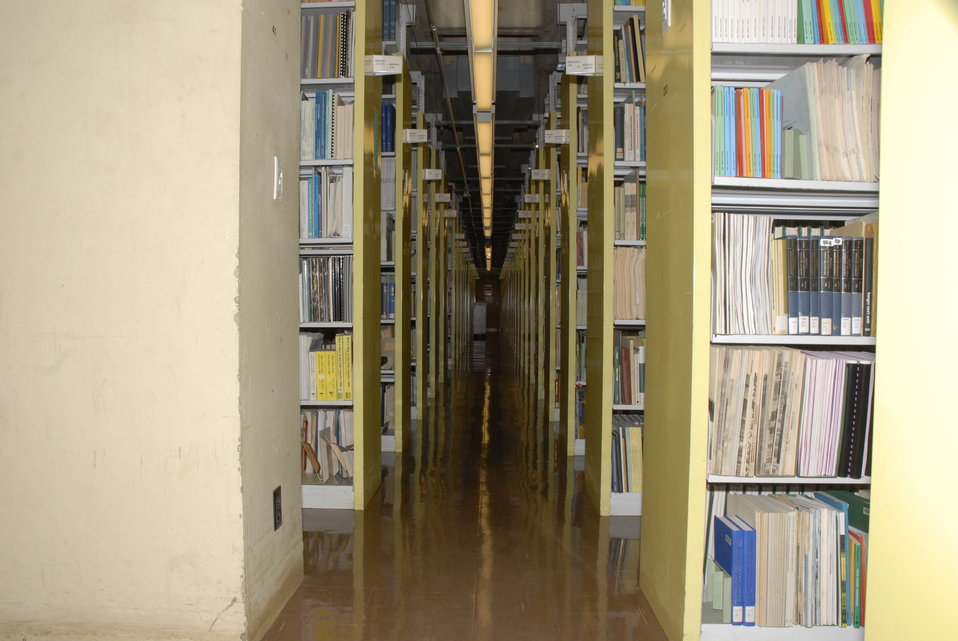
Hundreds of agricultural books are stored at the U.S. National Agricultural Library (NAL) in Beltsville, MD on August 22, 2008. NAL is one of the world's largest agricultural research libraries, and serves as a national library of the U.S. and as the library of the U.S. Department of Agriculture (USDA). The library is one of four national libraries of the U.S. (along with the Library of Congress, the National Library of Medicine, and the National Library of Education). It is also the coordinator for the Agriculture Network Information Center, a national network of state land-grant institutions and coordinator for USDA field libraries. NAL was established on May 15, 1862, by the signing of the Organic Act by Abraham Lincoln. It served as a departmental library until 1962, when the Secretary of Agriculture officially designated it as the National Agricultural Library. USDA photo Alice Welch.